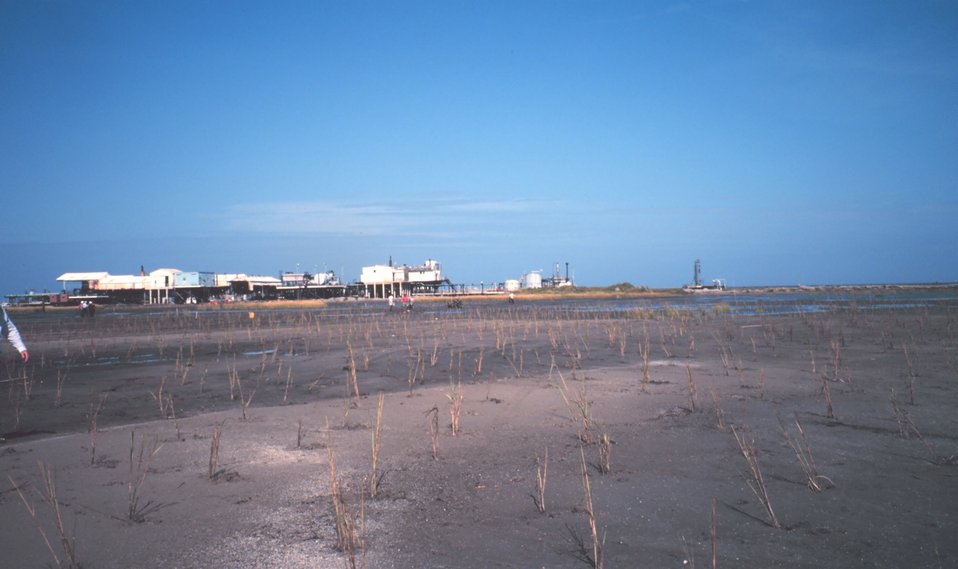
The Greenhill/East Timbalier newly created marsh with just planted Spartina alterniflora. Although plants look brown, they thrived after rainfall.